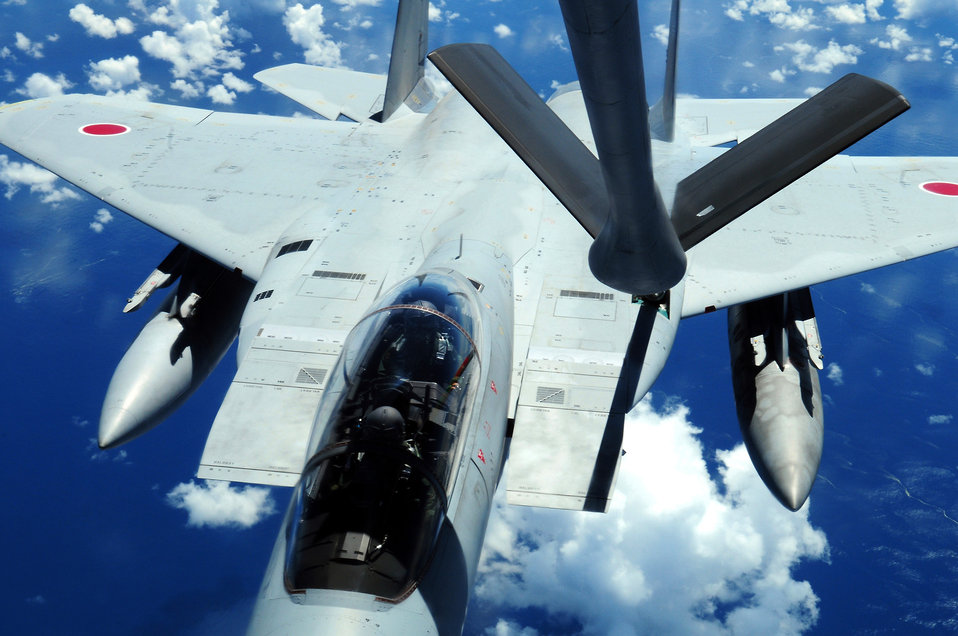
U.S., Japanese F-15 pilots train for Red Flag-Alaska

A Japan Air Self Defense Force F-15 is refueled by a U.S. Air Force KC-135 Stratotanker during air refueling training July 30 off the coast of Japan. The training is in preparation for JASDF participation in Red Flag-Alaska. The KC-135 is from the 909th Air Refueling Squadron, Kadena Air Base, Japan.